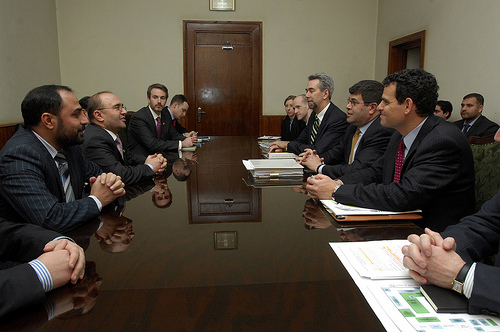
Meeting with Central Bank Governor Fitrat

Treasury's Larry McDonald, Deputy Secretary Wolin and Assistant Secretary David Cohen (at right) meeting with Central Bank Governor Fitrat (at left) in Kabul on Wednesday, February 10.